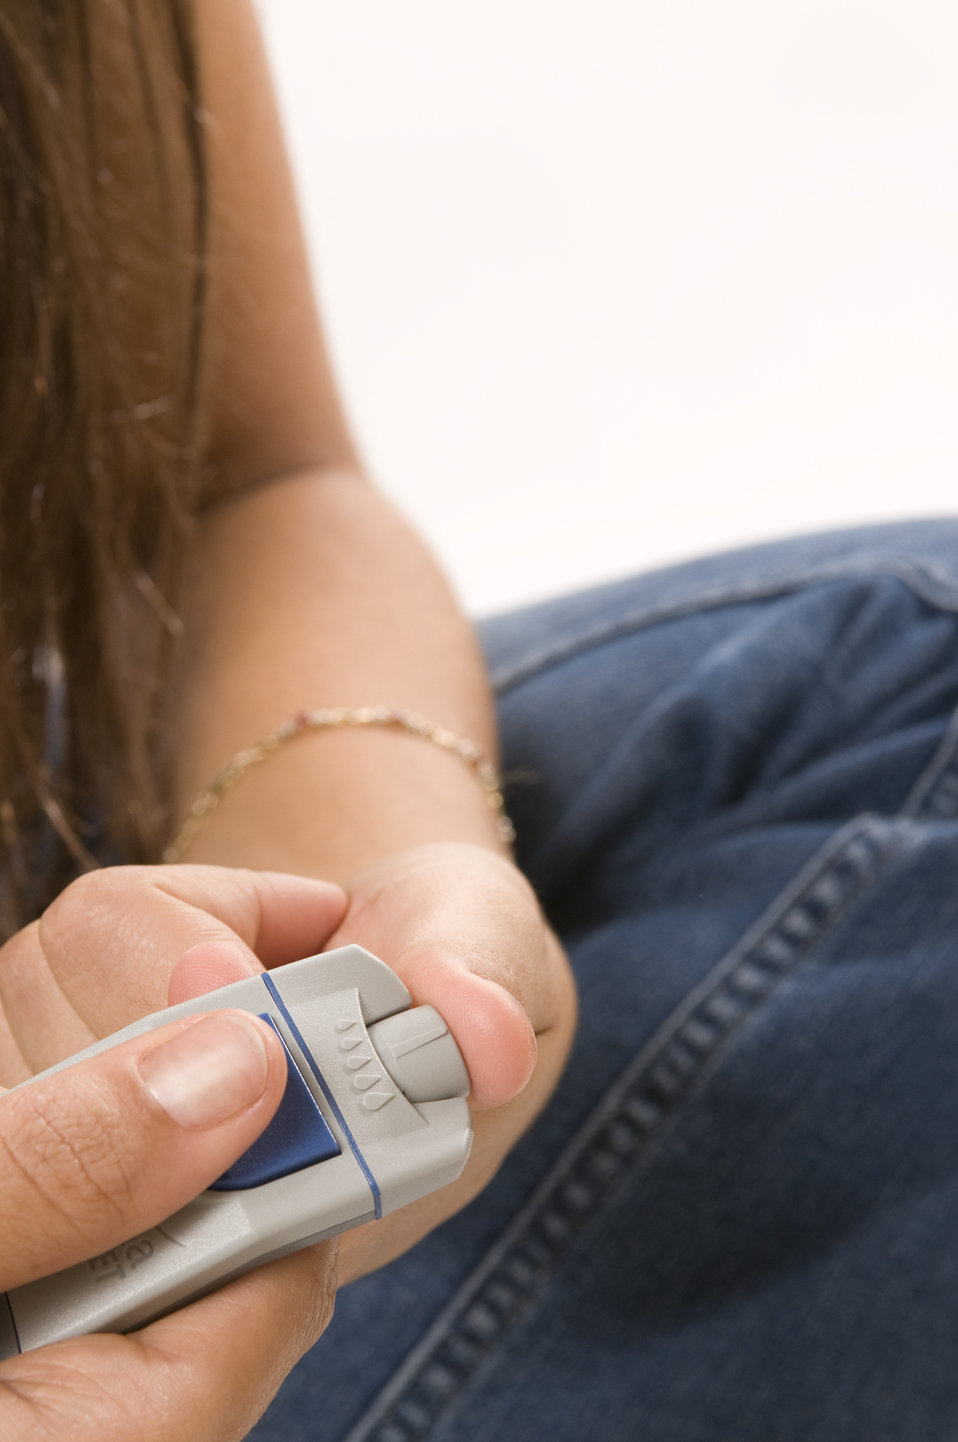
A young girl testing blood glucose

Pictured here, was a young girl who was in the process of testing her blood glucose level by using a self-monitoring finger stick device. Held against her left thumb, the monitoring device was secured using her right hand.